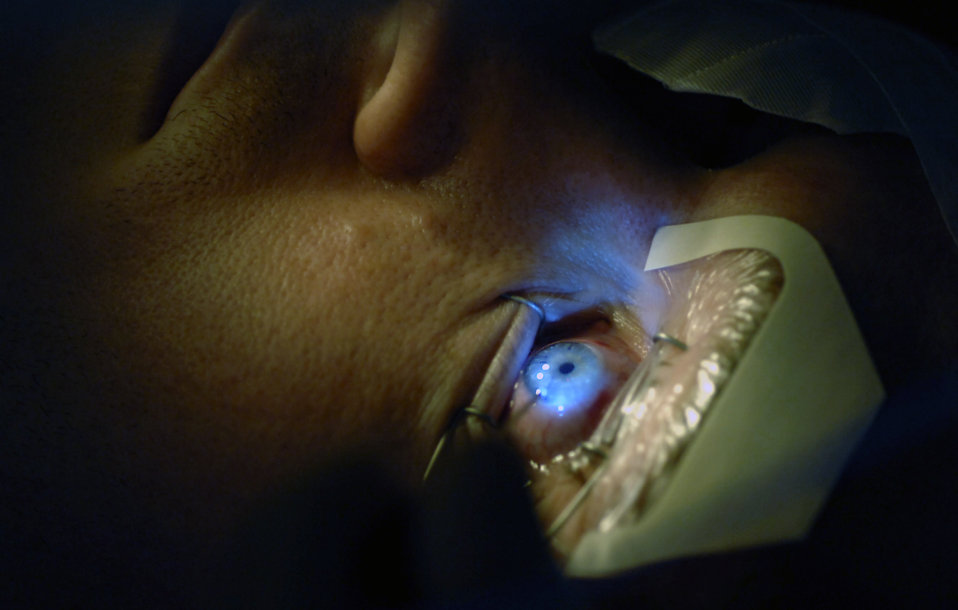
Wilford Hall opens Joint Warfighter Refractive Surgery Center

Senior Airman John Paul Marsh has his eyes checked just after receiving laser eye surgery Aug. 23 at the newly opened Defense Department Joint Warfighter Refractive Surgery at Lackland Air Force Base, Texas. Airman Marsh is with the Air Force Band of the West.